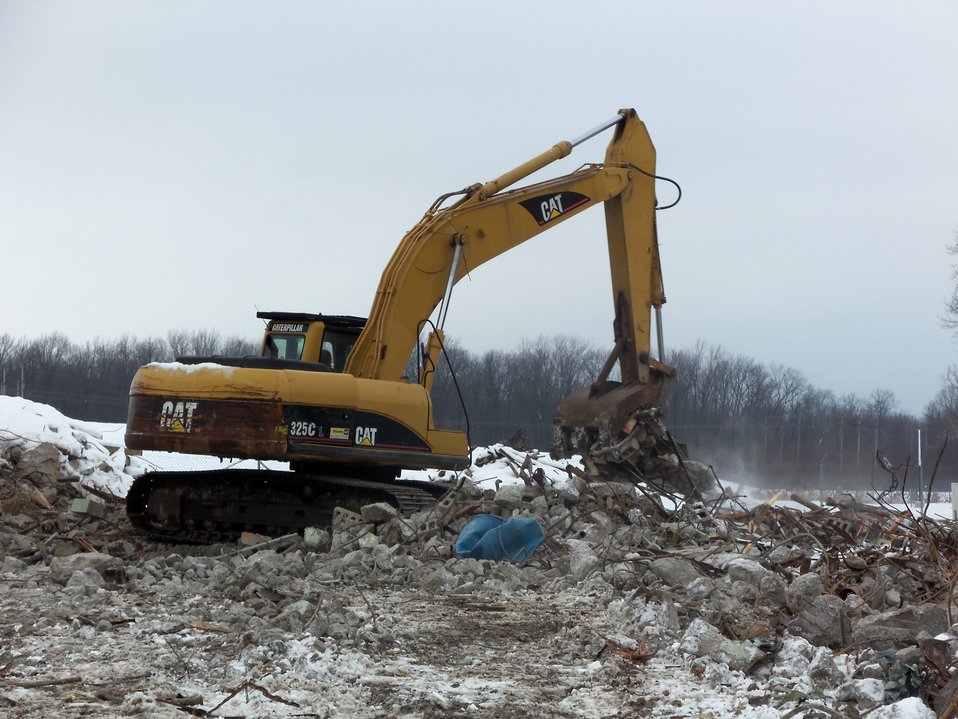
DEBRIS REMOVAL FROM FORMER BUILDING 401

Activities from the Niagara Falls Storage Site, which is associated with the former Lake Ontario Ordnance Works. Formerly Utilized Sites Remedial Action Program (FUSRAP), a program initiated in 1974 to identify, investigate and clean up or control sites that were part of the Nation's early atomic energy and weapons program. Activities at the sites that are eligible for FUSRAP were conducted by Manhattan Engineer District (MED) or the Atomic Energy Commission (AEC), both predecessors of the Department of Energy (DOE). The U.S. Army Corps of Engineers was assigned management of FUSRAP by Congress in 1997.